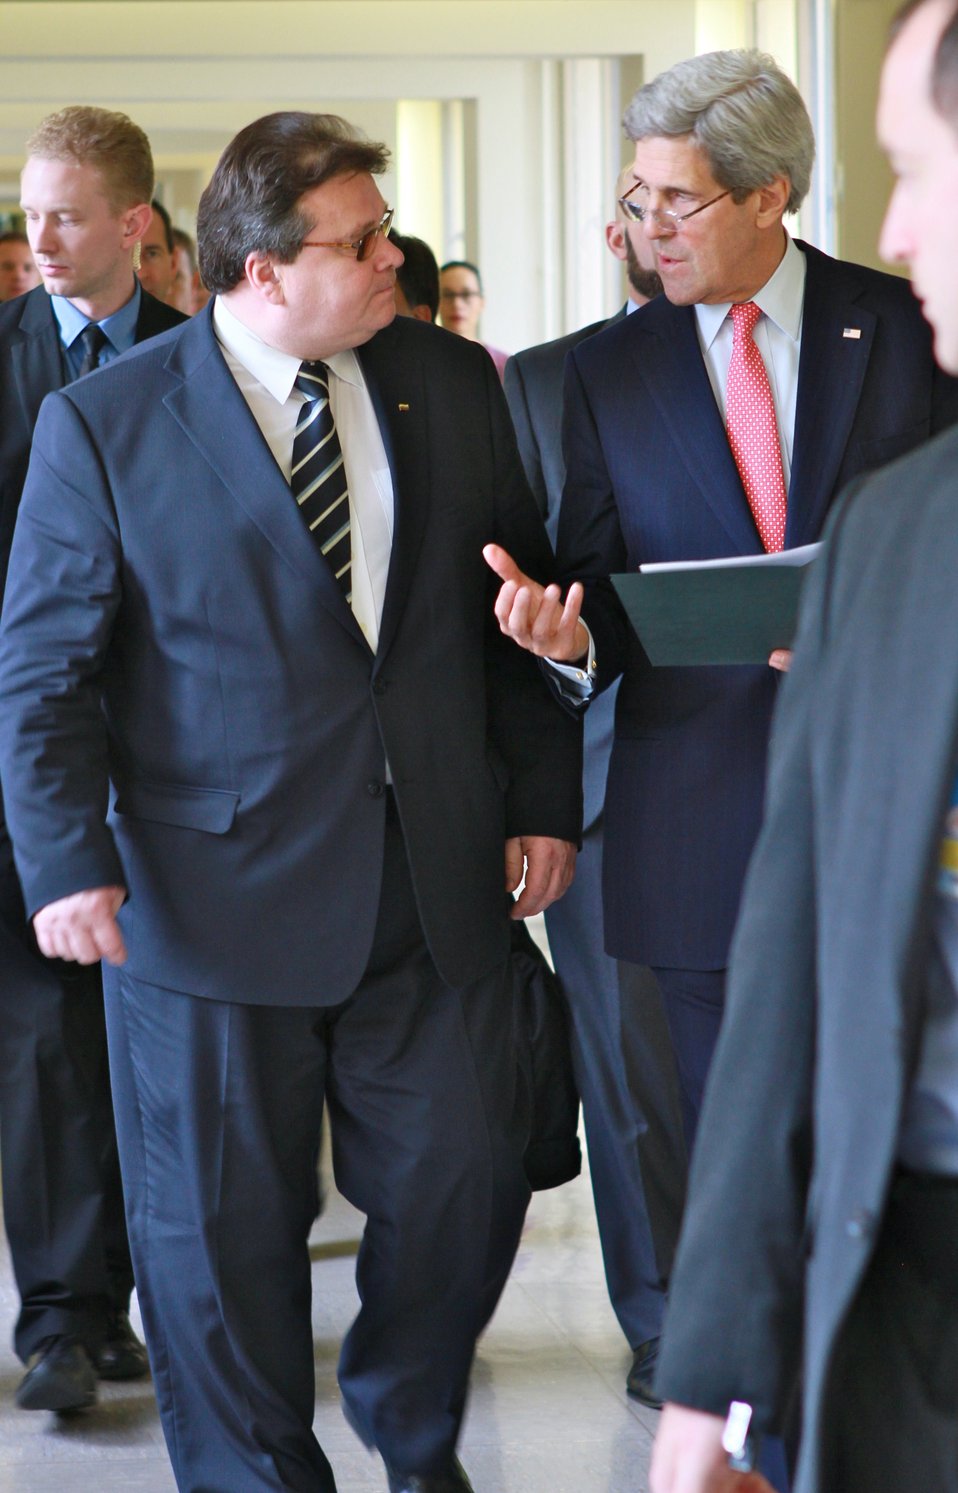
Secretary Kerry and Lithuanian Foreign Minister Linkevicius After Signing an Agreement

U.S. Secretary of State John Kerry and Lithuanian Foreign Minister Linas Linkevicius chat after signing an agreement to advance protection against nuclear and radiological smuggling at the NATO Foreign Ministerial in Brussels, Belgium on April 23, 2013.